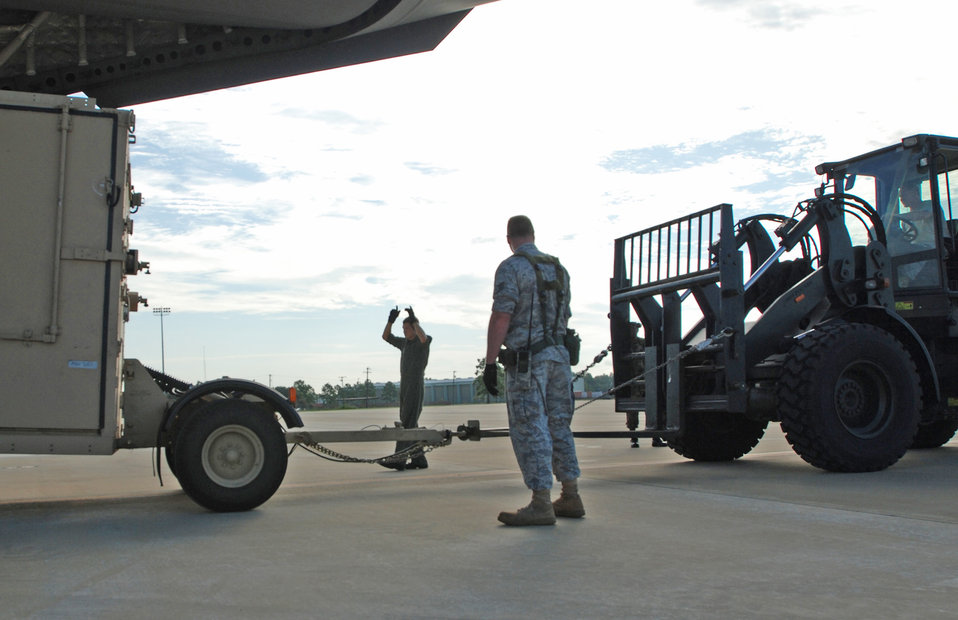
Trainer-mentors key to Airmen readiness for JRTC training

Staff Sgt. Jason Jones, a C-17 Globemaster III loadmaster, helps guide a forklift carrying supplies to a C-17 Aug. 18, 2009, during Joint Readiness Training Center Exercise 09-09 at Fort Polk, La. Observing Sergeant Jones is a trainer-mentor Airman who helps people attending a JRTC course gain knowledge and proficiency in their Air Force specialty while supporting operations in a joint combat environment.